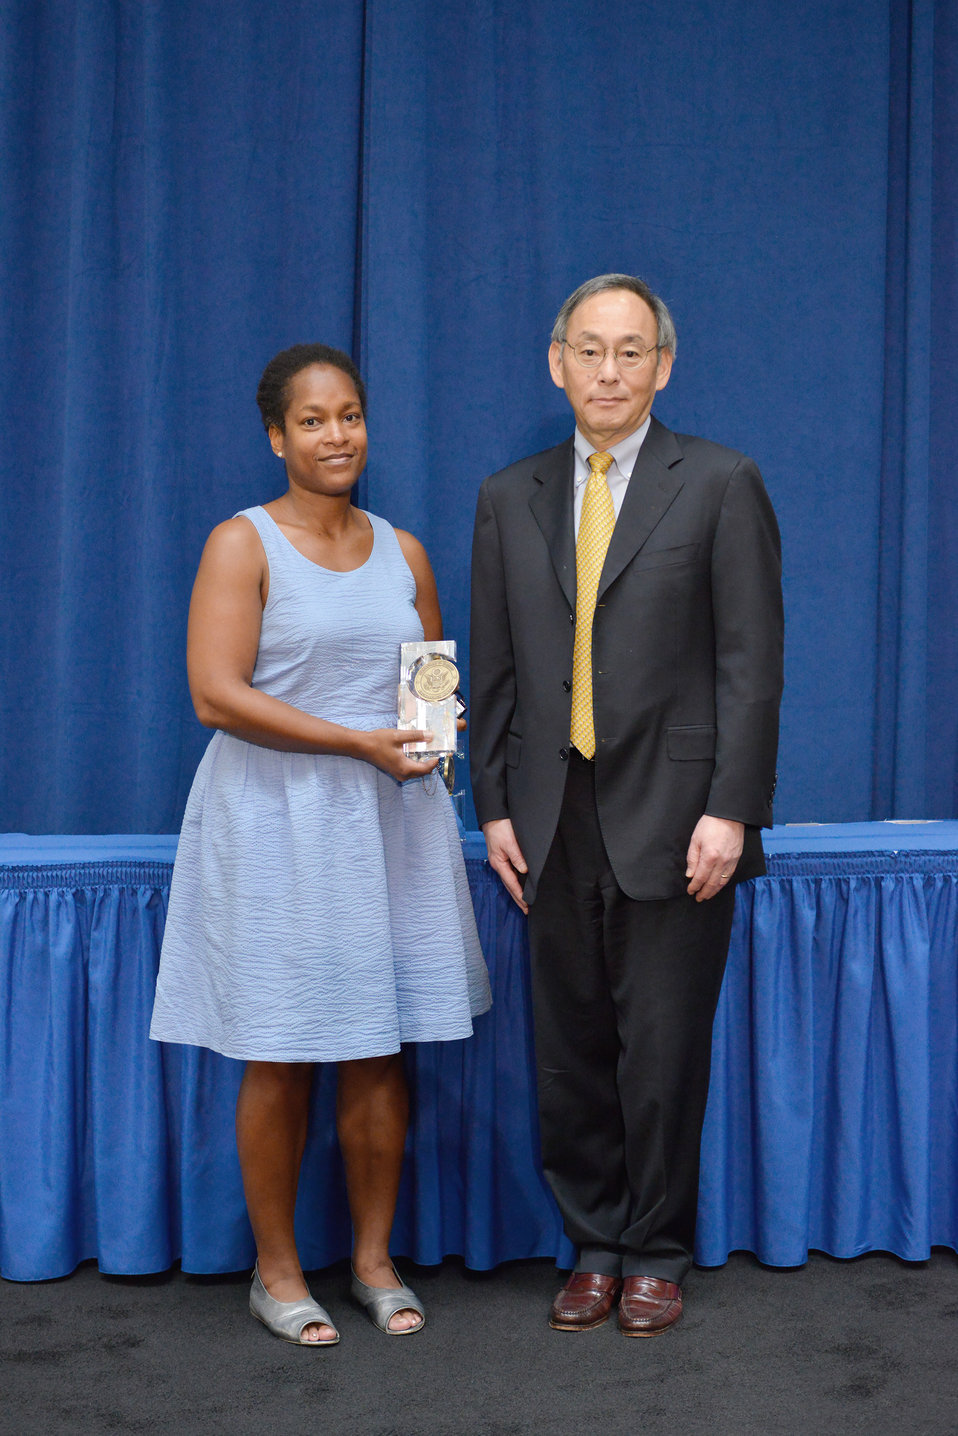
Excellence Award for David M. Hesse, accepted by Sonja Baskerville

Sonja Baskerville accepts the Secretarial Excellence award on behalf of David M. Hesse, award recipient, who could not be at the awards event.
David M. Hesse, on his own initiative, developed innovative computer software for transmission tower design. The software program, called the Advanced Tower Analysis and Design System, has already saved the Bonneville Power Administration over $18 million. These savings will continue to accrue with each improved tower that is constructed. The new stronger, lighter towers developed with Mr. Hesse's software use less steel and cost up to 25 percent less than previous tower designs. Their greater strength improves reliability yet requires fewer towers per circuit-mile, thereby reducing the environmental impact of transmission line construction. Engineers using Mr. Hesse's program can, in one day, evaluate a variety of different configurations. Without the software weeks or months were required to evaluate just one configuration. Not only is the Bonneville Power Administration a beneficiary of these savings; the agency has shared this time and money-saving software with utilities across the nation and the world, significantly expanding its benefits.